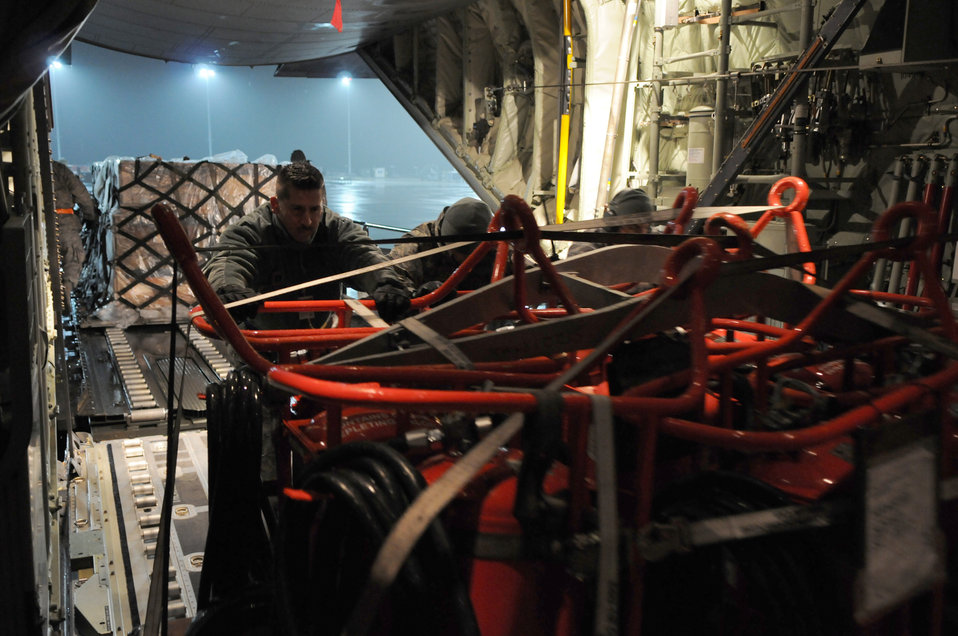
Operation Odyssey Dawn

SPANGDAHLEM AIR BASE, Germany ?Airmen from the 52nd Logistics Readiness Squadron load cargo onto a C-130J Hercules here for shipment in support of Operation Odyssey Dawn March 19. Joint Task Force Odyssey Dawn is the U.S. Africa Command task force established to provide operational and tactical command and control of U.S. military forces supporting the international response to the unrest in Libya and enforcement of United Nations Security Council Resolution (UNSCR) 1973. UNSCR 1973 authorizes all necessary measures to protect civilians in Libya under threat of attack by Qadhafi regime forces. JTF Odyssey Dawn is commanded by U.S. Navy Admiral Samuel J. Locklear, III.